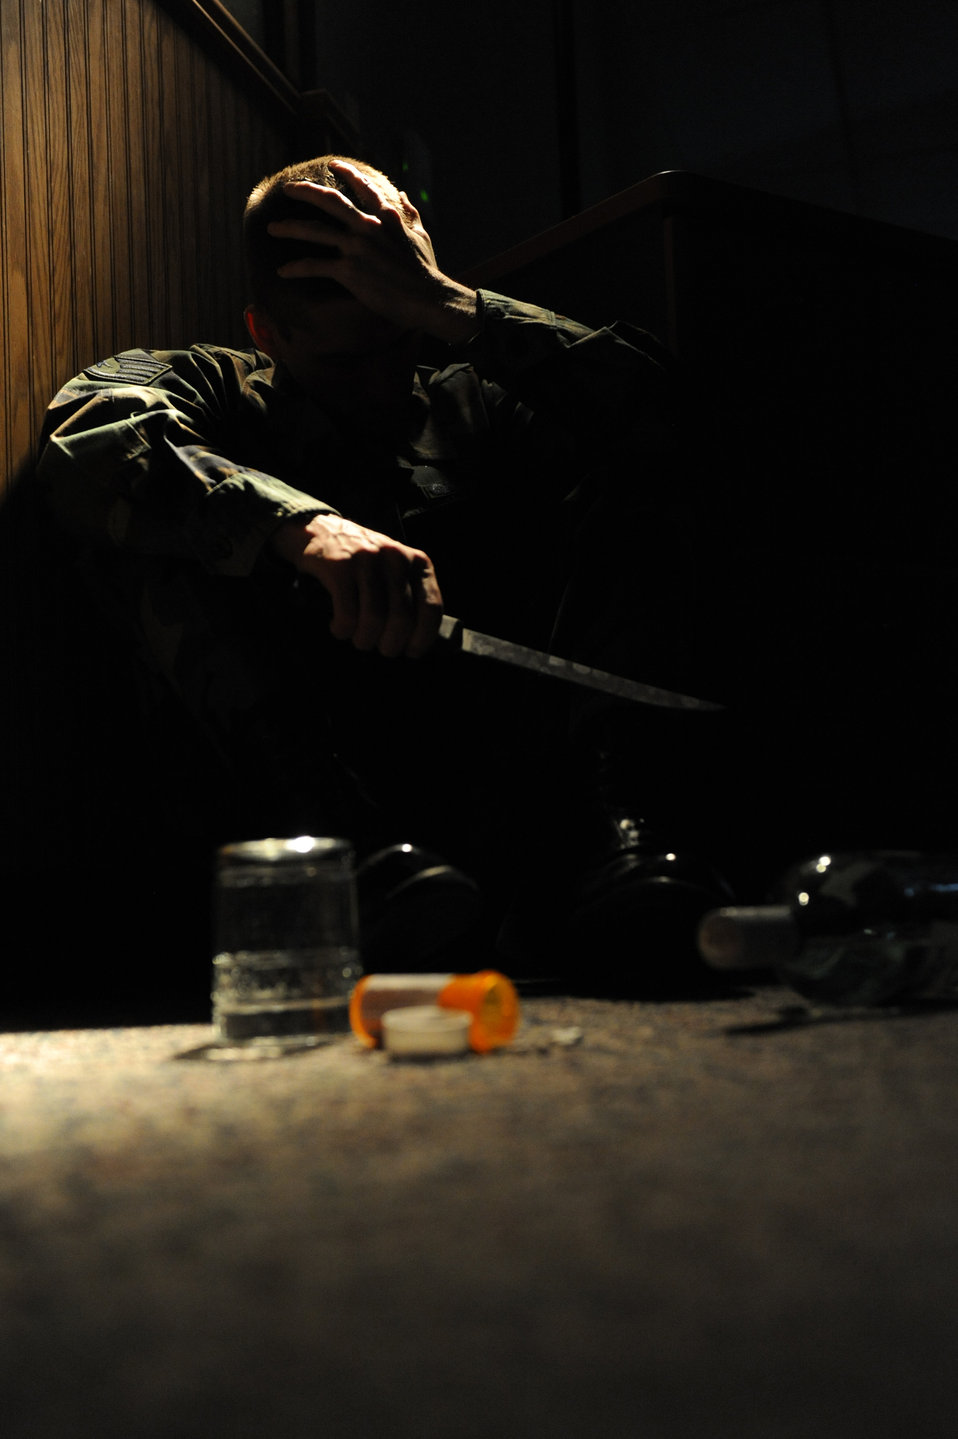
Suicide prevention: The effort starts with you

Suicide prevention and awareness briefings are available by base medical professionals. Other sources for more information include the Military One Source/Military Homefront Web sites and the annual computer based training.